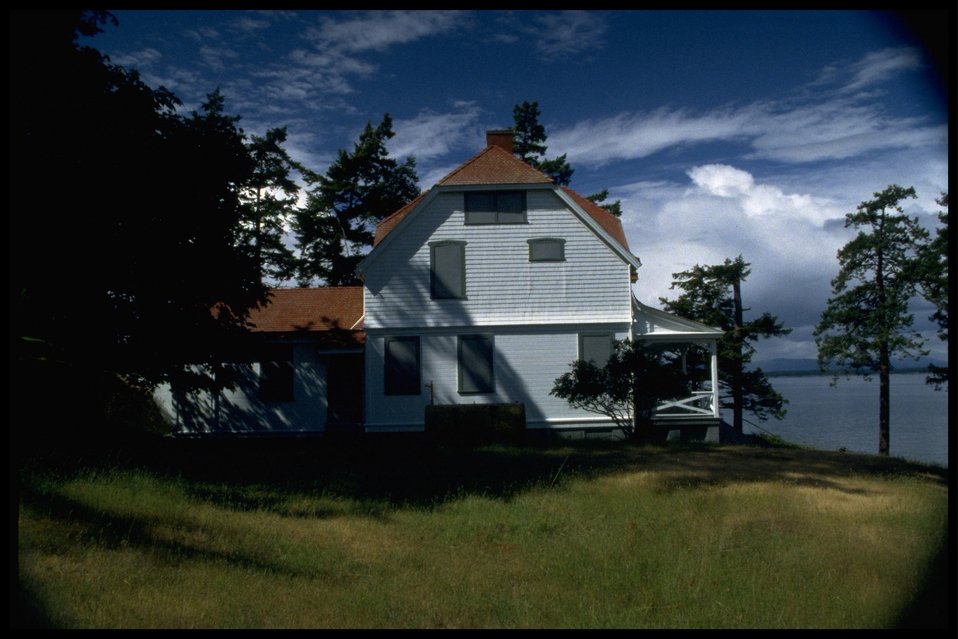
Living quarters at Turn Point. One in a series of ten shots of the living quarters.